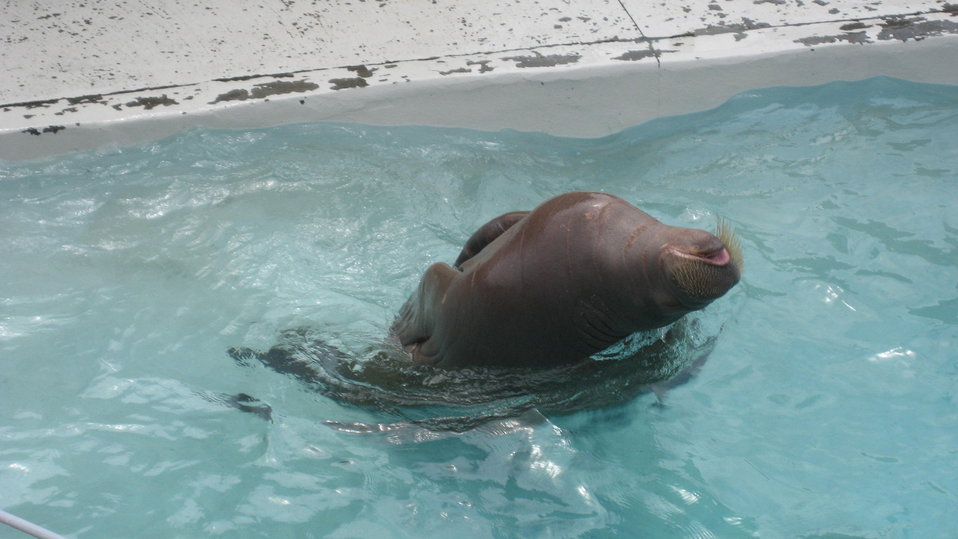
Parc Aquarium Du Quebec